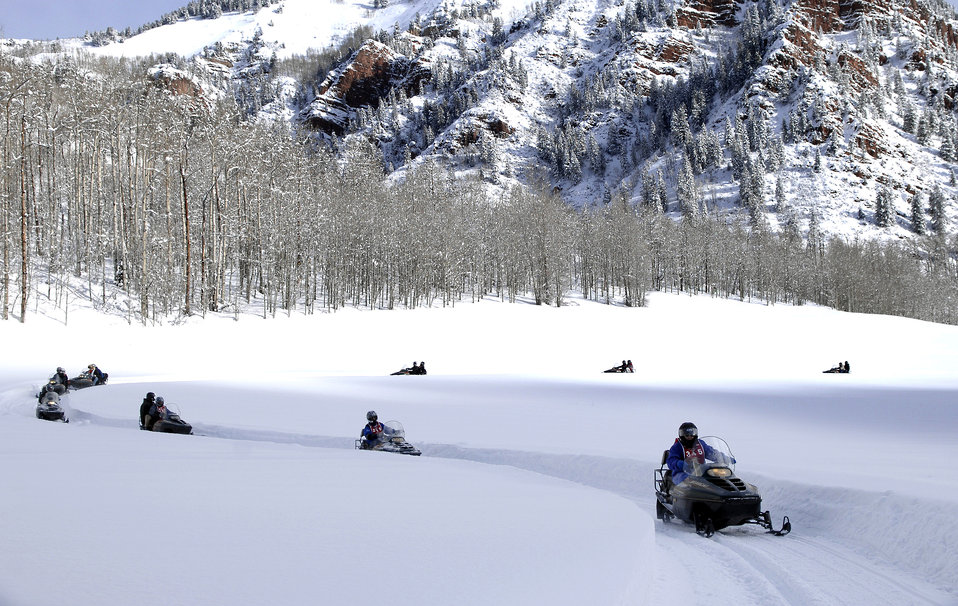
Enjoying the great outdoors

Several disabled veterans snowmobile during the winter sports clinic held at Snowmass Village, Colo. The annual clinic helps motivate and rehabilitate disabled veterans physically, emotionally and spiritually. The veterans can also learn Alpine and Nordic skiing, rock climbing and sled hockey.